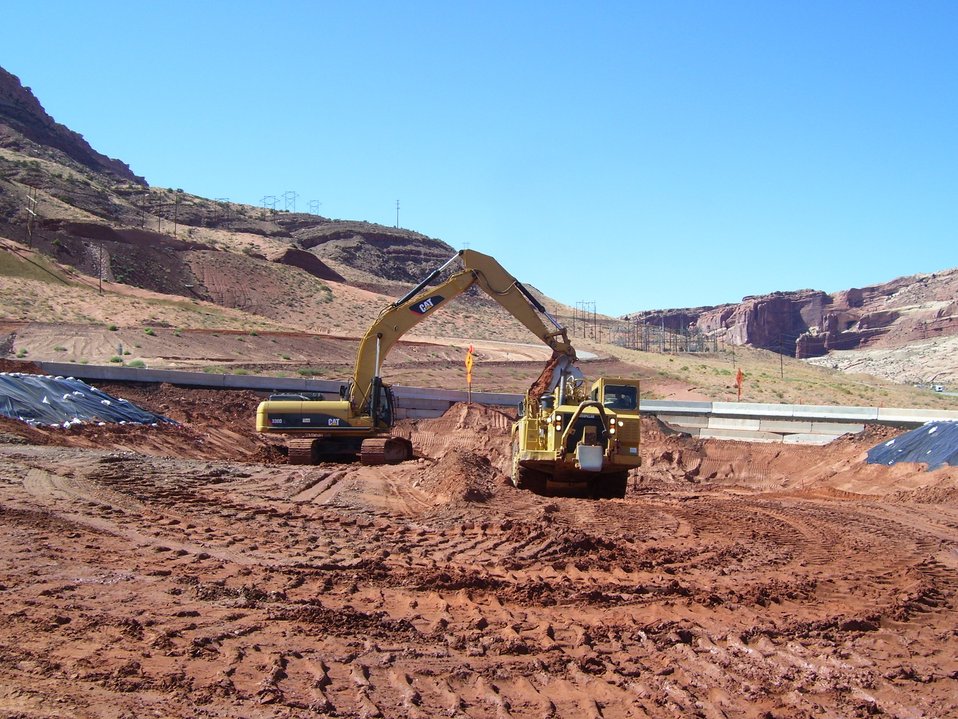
Moab bypass